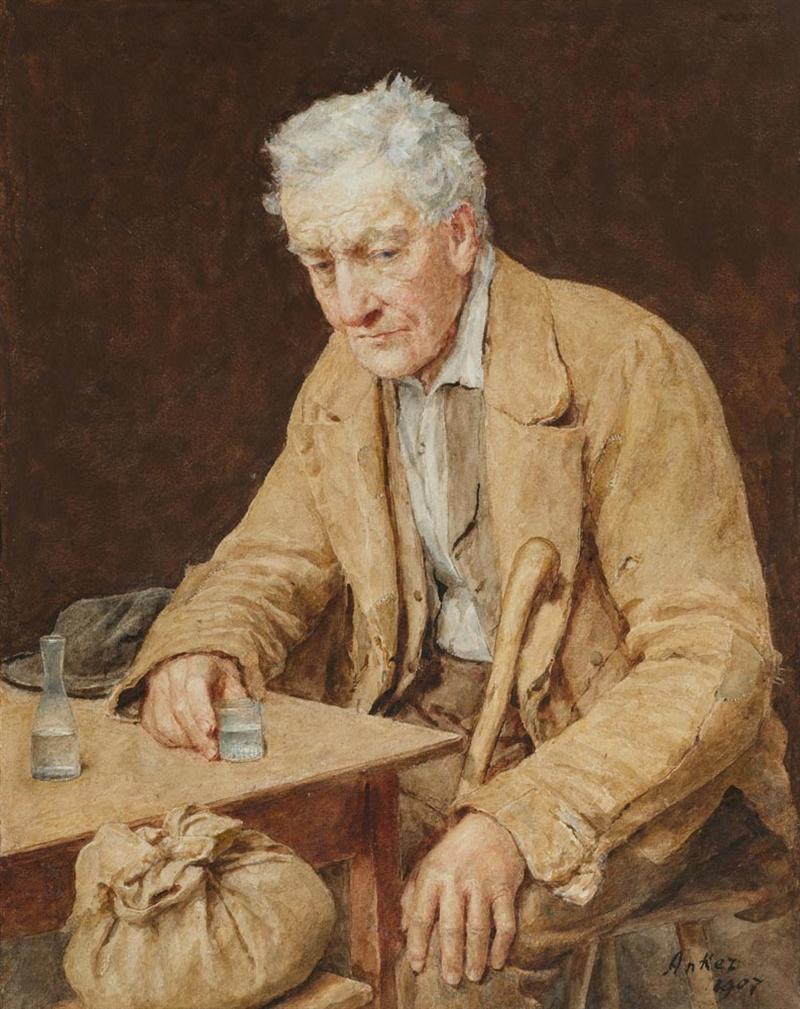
Albert Anker - Der Absinthtrinker